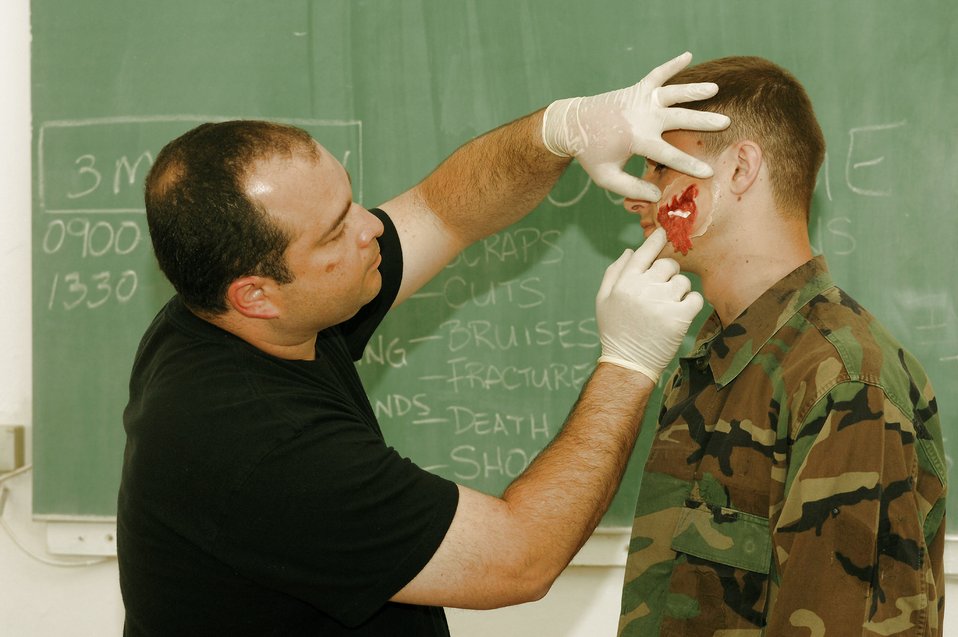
Medical training exercise supports partnership for peace

Tech. Sgt. Stephen DeReis demonstrates the application of moulage on Cadet Abbasov Maksim May 3 for cadets from the Military Medicine Faculty of the Azerbaijan Medical University during the 2008 Medical Training Exercise in Central and Eastern Europe. MEDCEUR is a Joint Chiefs of Staff regional/multilateral exercise sponsored by U.S. European Command. Croatia is hosting the 2008 exercise which has drawn about 400 multi-nationals in support of the Partnership for Peace initiative. Sergeant DeReis is with the 458th Expeditionary Medical Squadron.